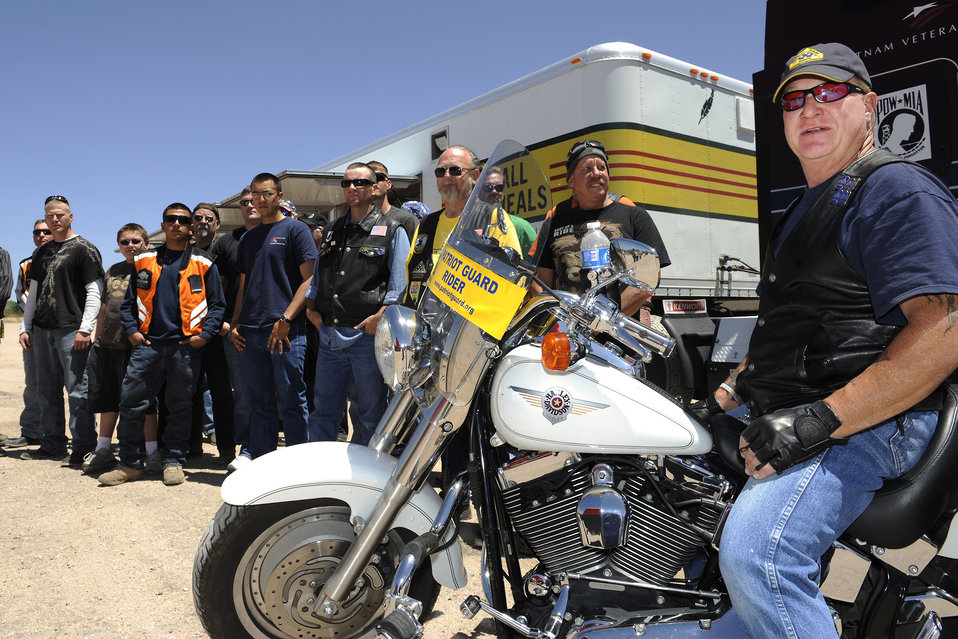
traveling Vietnam Wall

Local motorcyclists, including government employees, former and current military members and civilians, pose by the traveling Vietnam Memorial Wall June 7, 2011, in Colorado Springs, Colo. The riders joined members of the Patriot Guard Riders to escort the display as it traveled to Fort Carson, Colo., for a six-day display.